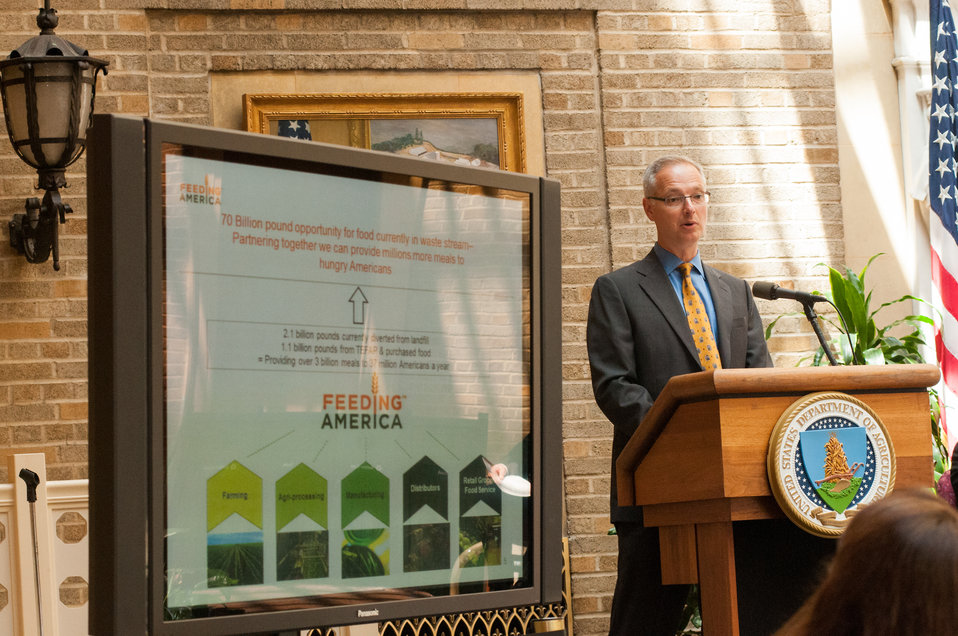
President and Chief Executive Officer (CEO) of Feeding America Bob Aiken discusses the importance of public and private cooperation in the effort to end hunger in the U.S. during the U.S. Food Waste Challenge sponsored by the U.S. Department of Agriculture (USDA) and Environmental Protection Agency at USDA in Washington, D.C. on Tuesday, Jun. 4, 2013. The U.S. Food Waste Challenge is a nationwide effort to reduce, recover and recycle U.S. food waste.